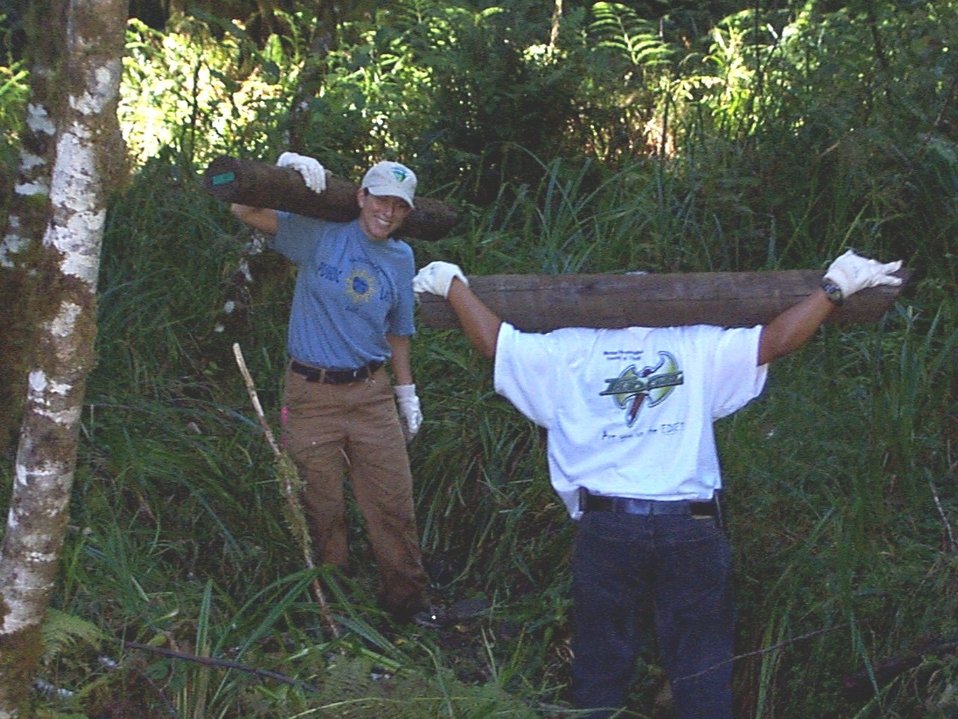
Volunteers install interpretive sign at McGowen Creek, McKenzie RA.